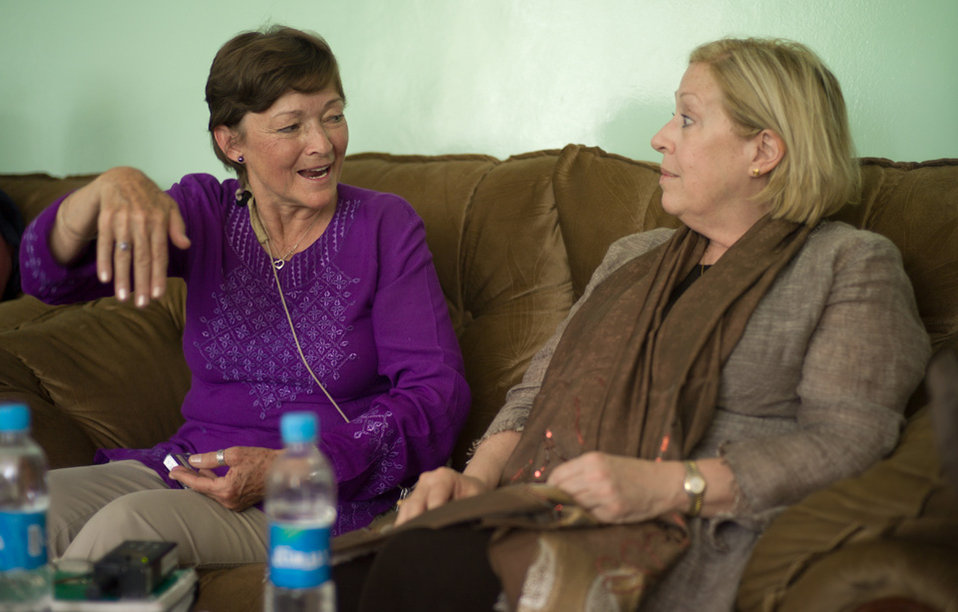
Nancy telling Carol a story